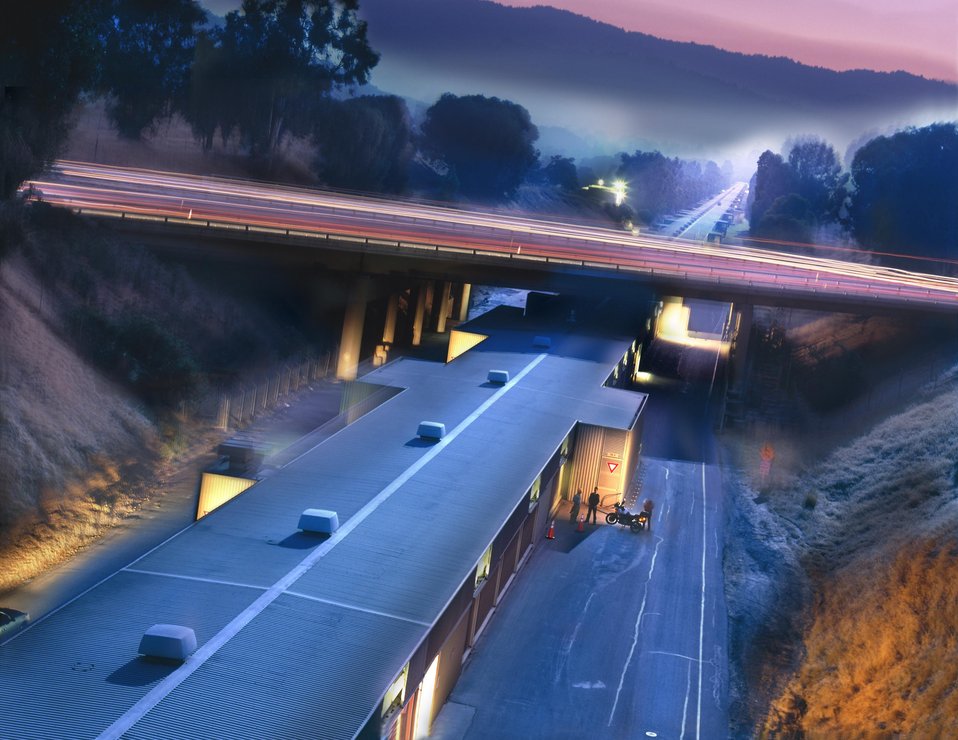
THE KLYSTRON GALLERY OF THE TWO MILE LONG LINEAR ACCELERATOR AT THE STANFORD LINEAR ACCELERATOR.

SLAC IS ONE OF WORLD'S LEADING RESEARCH LABORATORIES. LOCATED AT STANFORD UNIVERSITY, MENLO PARK, CALIFORNIA, ITS MISSION IS TO DESIGN, CONSTRUCT AND OPERATE STATE OF THE ART ELECTRON ACCELERATORS AND RELATED EXPERIMENTAL FACILITIES FOR USE IN HIGH ENERGY PHYSICS AND SYNCHROTRON RADIATION RESEARCH.